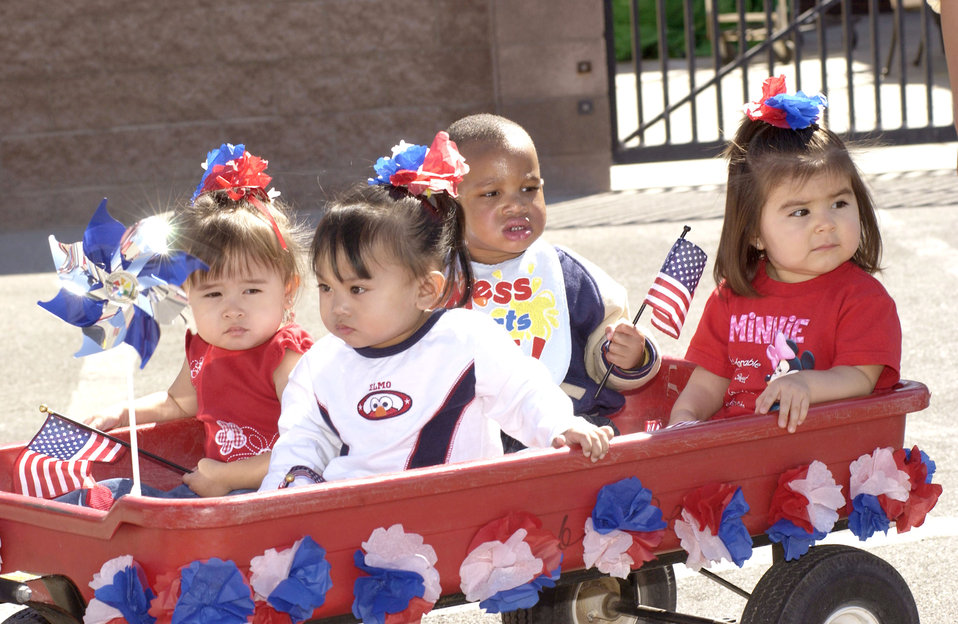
American pride

NELLIS AIR FORCE BASE, Nev. -- Children at the child development center here ride in the back of a wagon during the red, white and blue parade April 1 to kick off the Month of the Military Child.